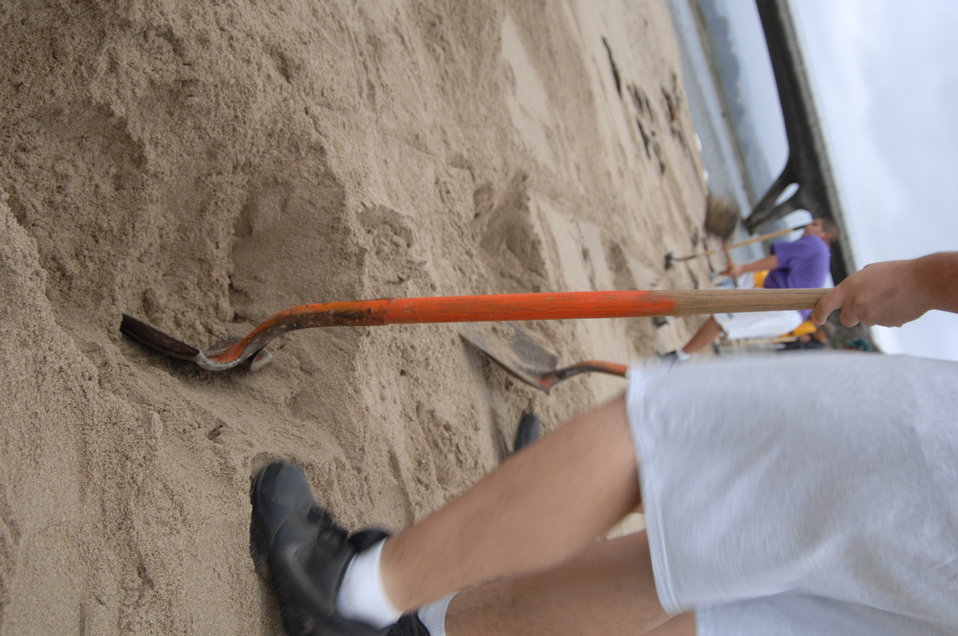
Pescadero Breach 5